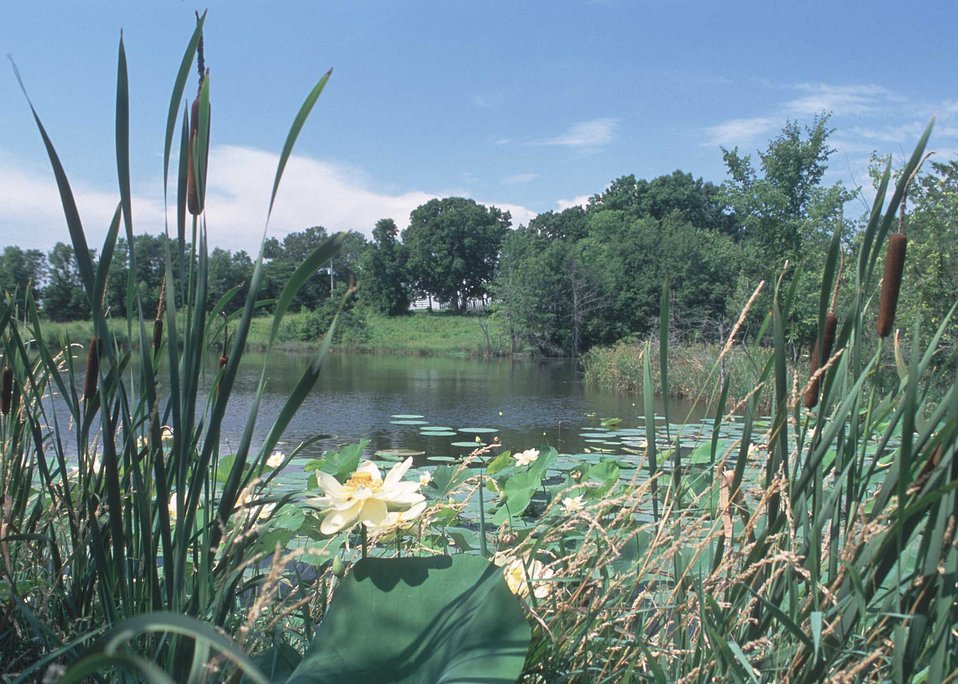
Water-loving plants on the edge of a pond in Van Buren County, Iowa.